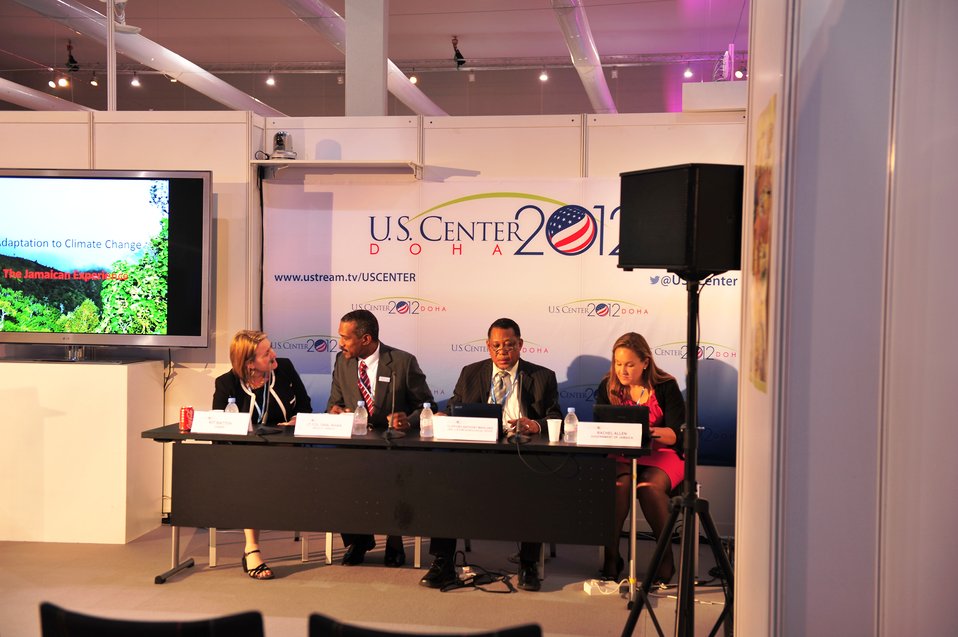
USAID presents the National Adaptation Plans: a Jamaican Experiment at the U.S. Center at the 18th Session of the Conference of the Parties to the UN Framework Convention on Climate Change (COP-18) in Doha, Qatar, December 4, 2012.